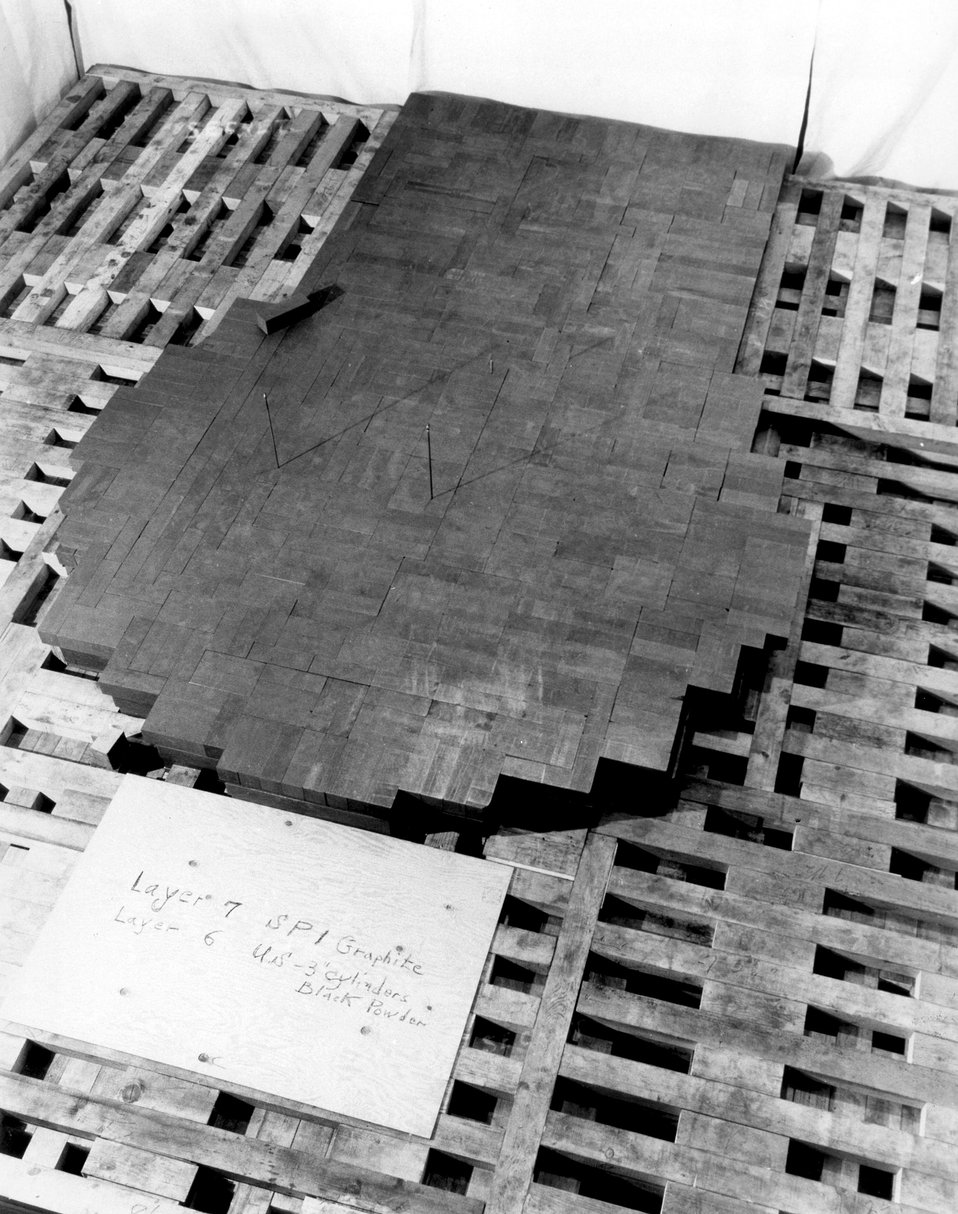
CP-1 during assembly. Photograph shows the 7th layer of graphite blocks and edges of the 6th layer.